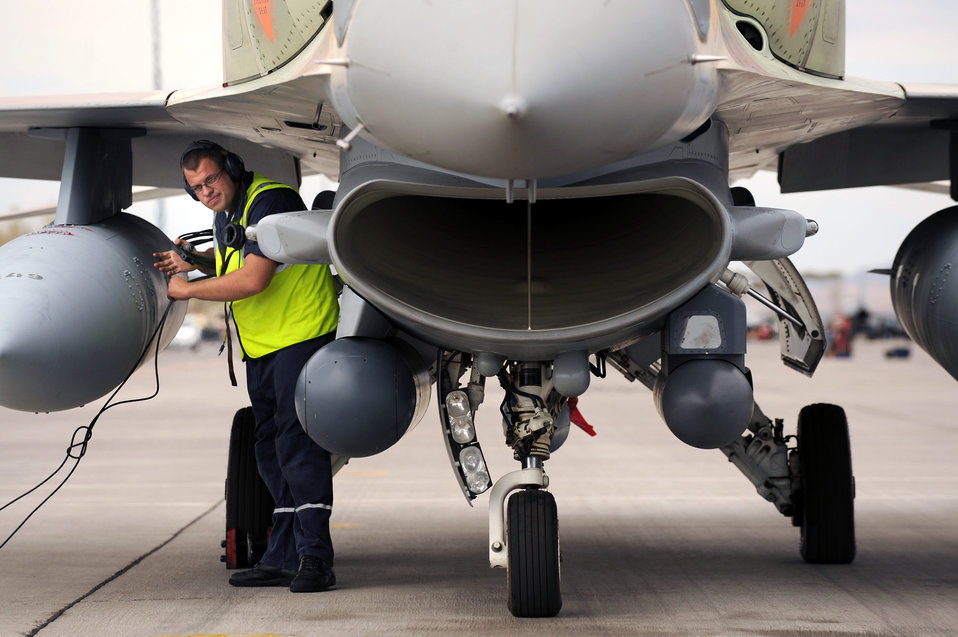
Realistic training with Red Flag

Alexsi, a crew chief with the Israeli air force, conducts pre-flight checks at Nellis Air Force Base, Nev., before a training mission at Red Flag 09-4. Red Flag is a realistic combat training exercise involving the air forces of the United States and its allies.